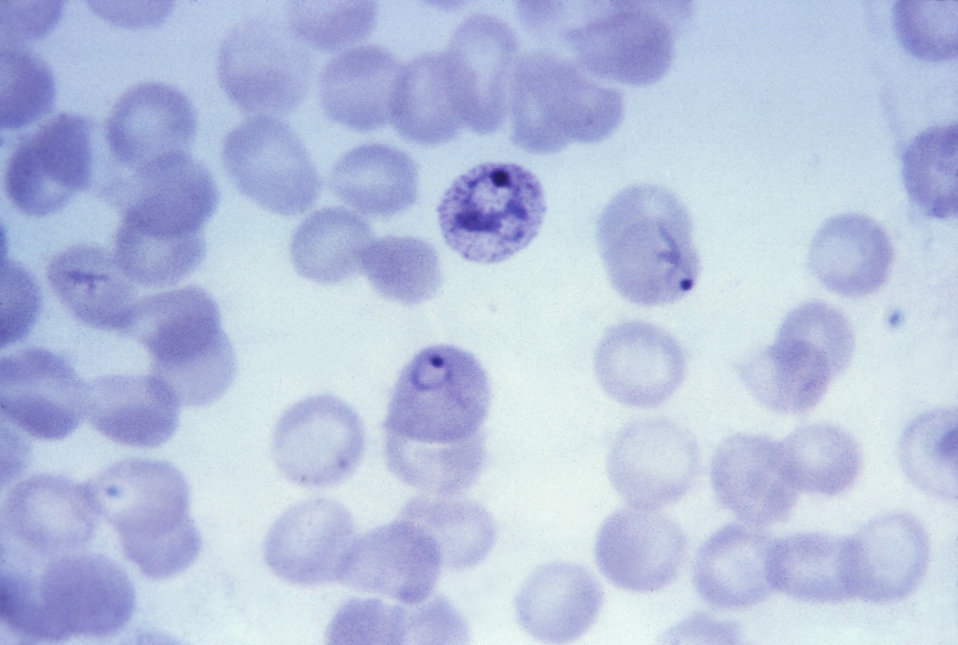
This thin film Giemsa stained micrograph shows a number of growing P. vivax trophozoites in various developmental stages.